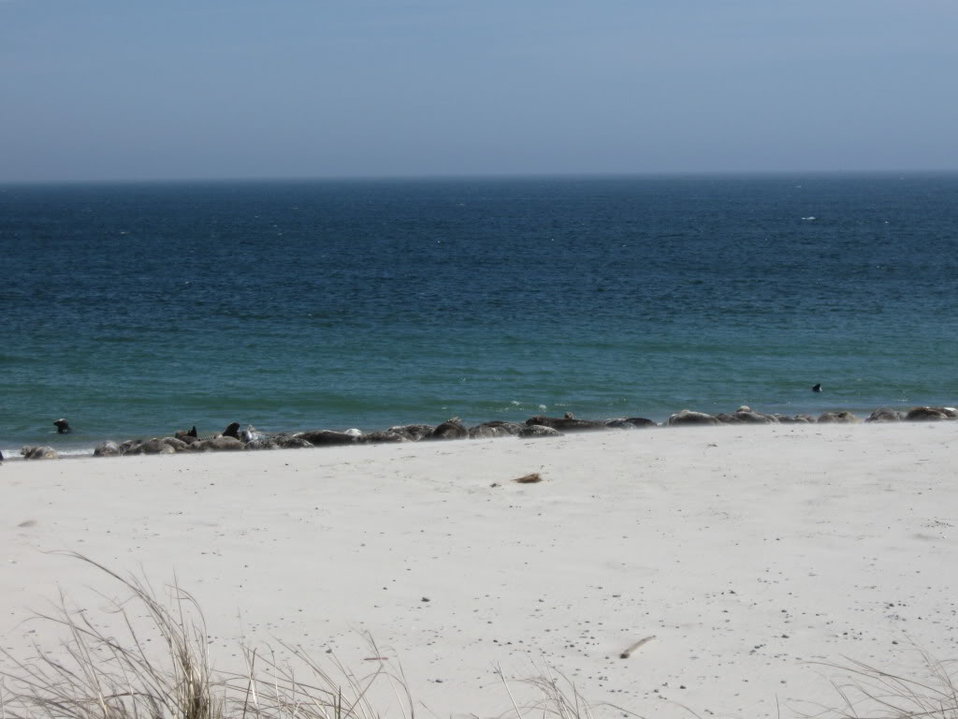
Seals at Monomoy National Wildlife Refuge.

Credit: Zachary Cava/USFWS

Monomoy National Wildlife Refuge is part of the Eastern Massachusetts National Wildlife Refuge Complex.